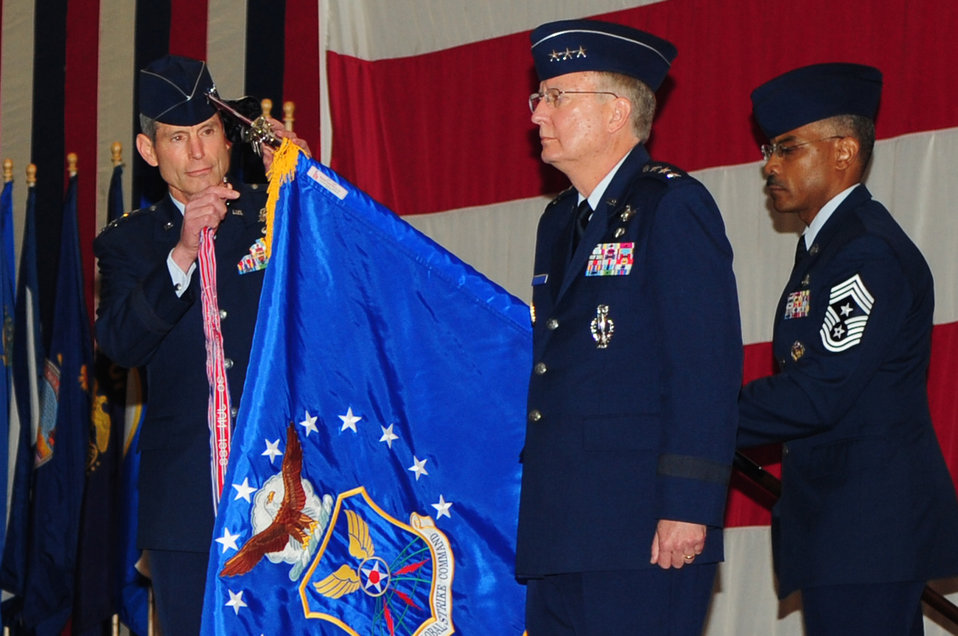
Air Force Global Strike Command activated

Air Force Chief of Staff Gen. Norton Schwartz adds guidon streamers to the flag of Air Force Global Strike Command Aug. 7 at Barksdale Air Force Base, La. The streamers represent achievements of the historical Strategic Air Command, deactivated in 1992. When fully operational, AFGSC will encompass 23,000 Airmen from 8th Air Force at Barksdale AFB, and 20th Air Force at F.E. Warren AFB, Wyo., including six operational wings and two squadrons, the 576th at Vandenberg AFB, Calif., and the 625th Strategic Operations Squadron at Offutt AFB, Neb.